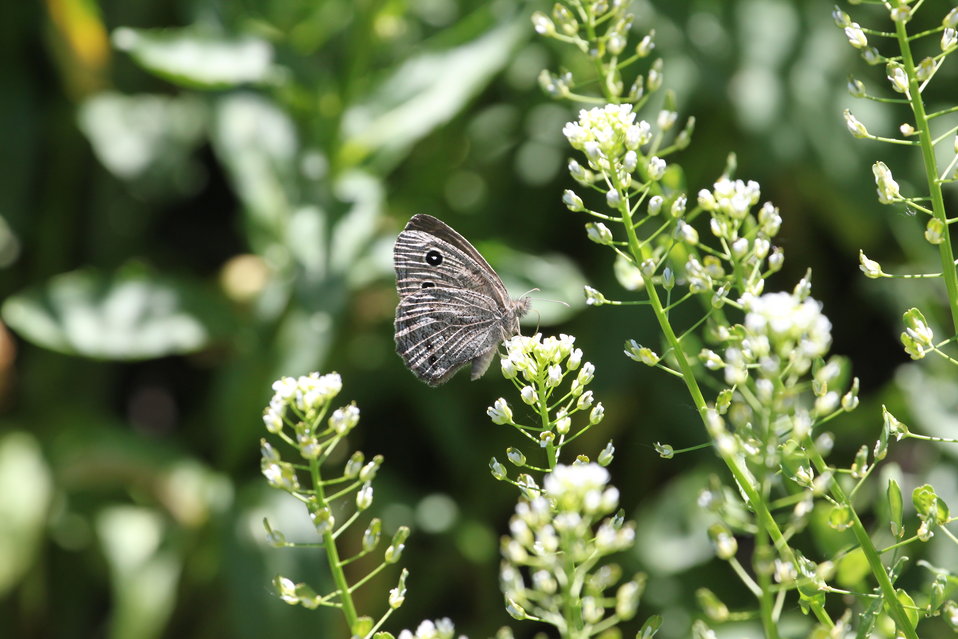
Small Wood-Nymph

Cercyonis oetus nectaring in grassland habitat.